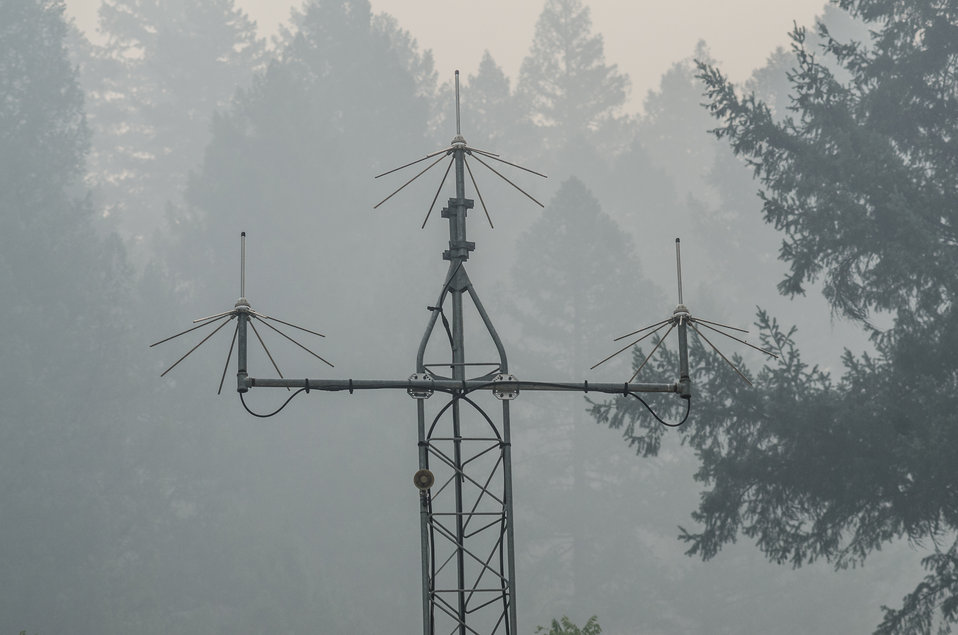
Smoke permeates the air of Sawyers Bar, CA, on Wednesday, Aug. 6, 2013. Salmon River Complex Fire is northwest of Sawyers Bar and west of Etna and Yreka, CA in the Klamath National Forest.